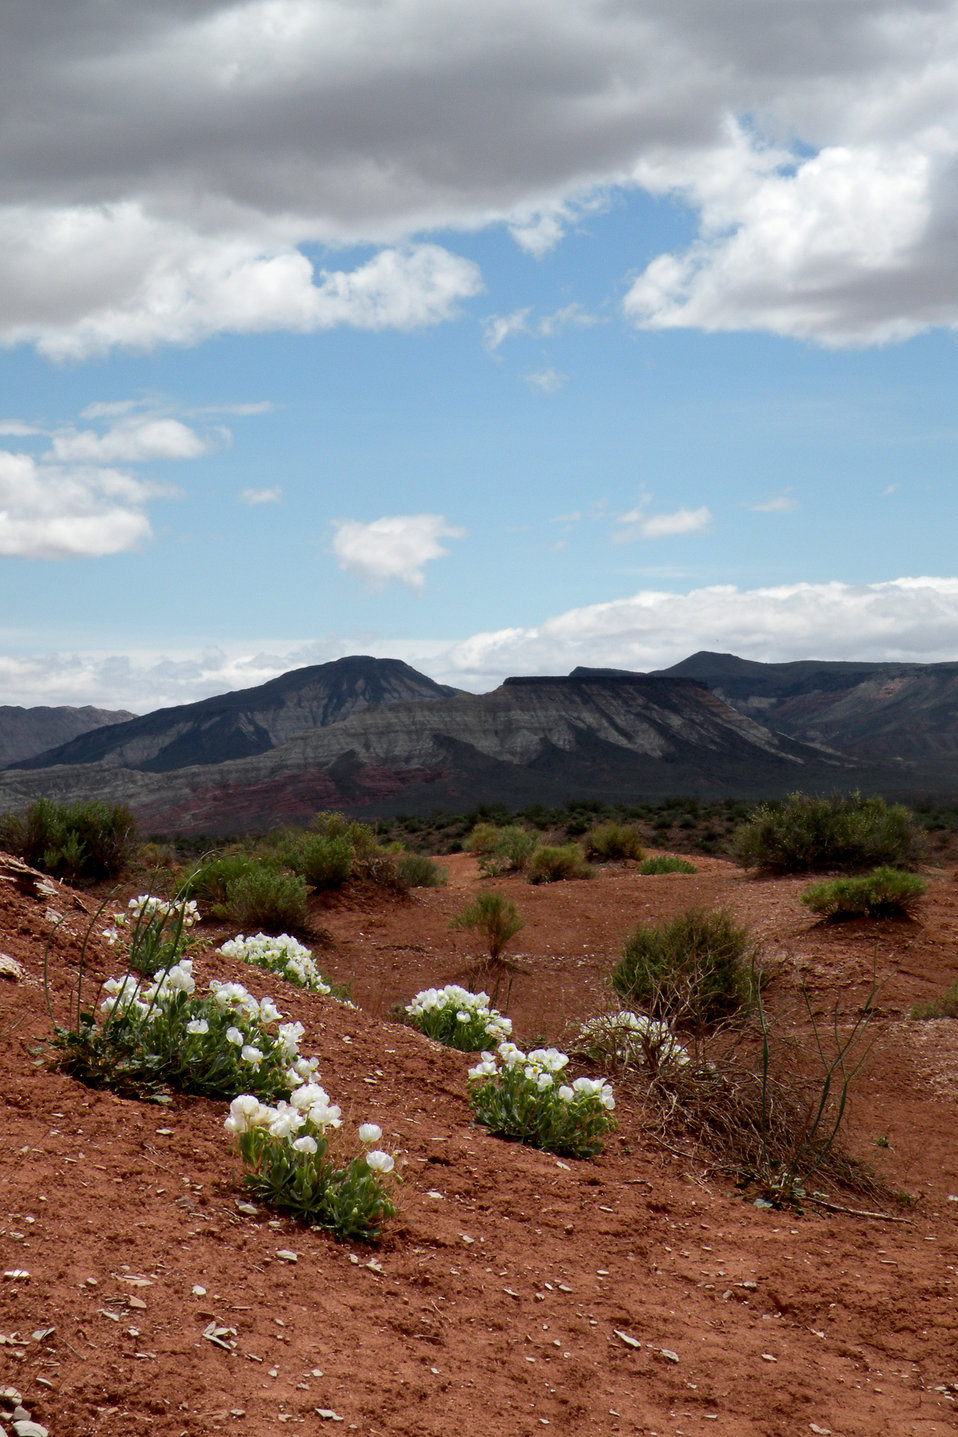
Dwarf bearclaw poppy (Arctomecon humilis) - Habitat

Dwarf bearclaw poppy occur on rolling hills and bluffs in sparsely-vegetated desert shrub communities between 2,700 ft and 3,330 ft. in elevation.